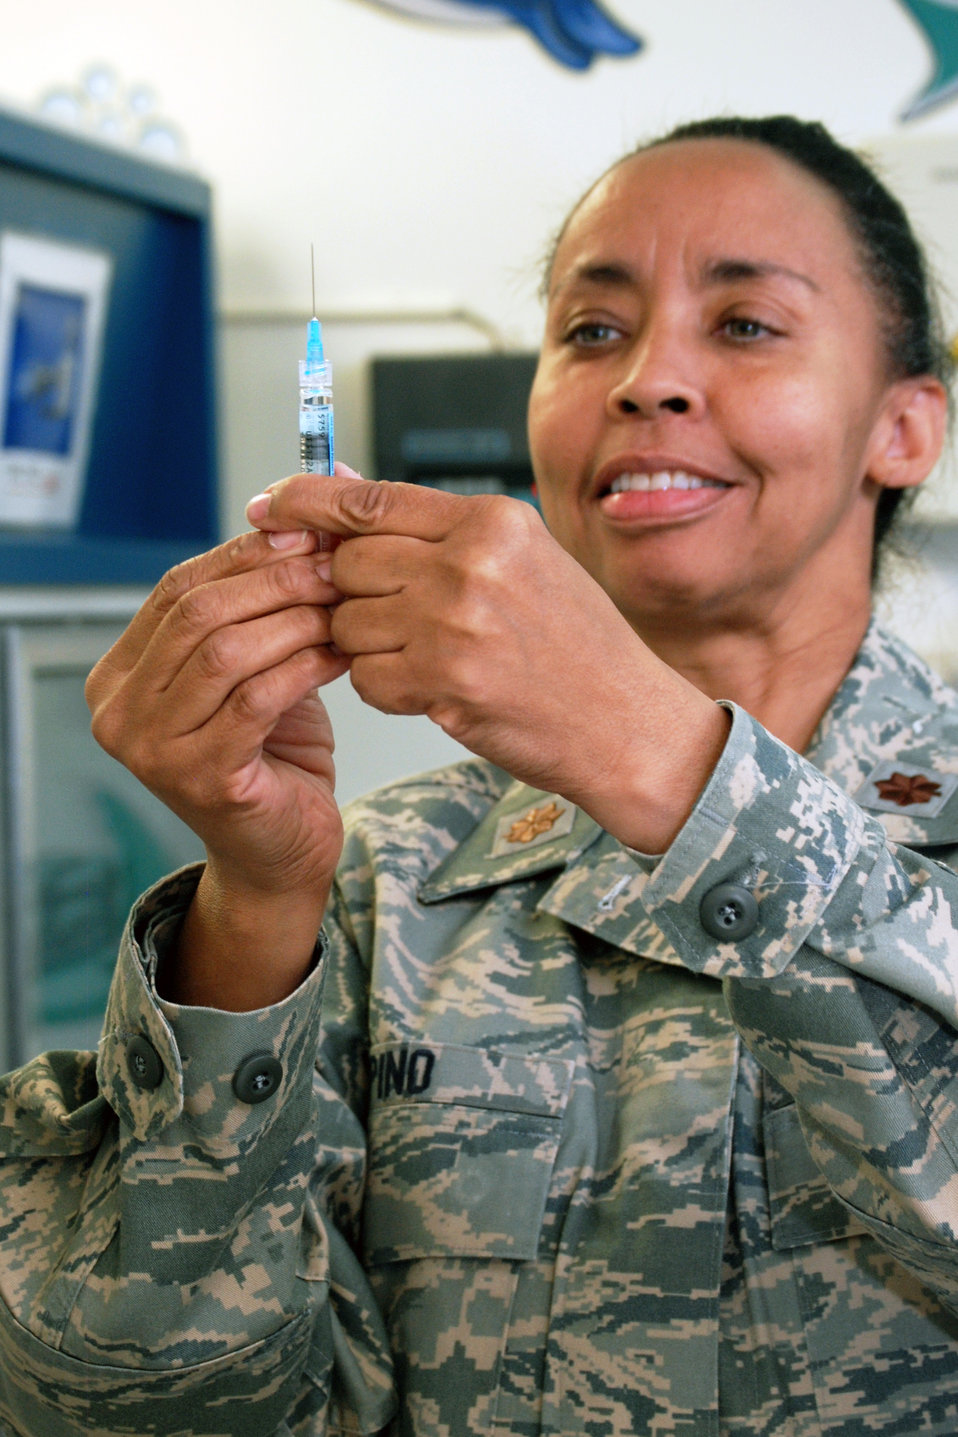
Maj. Paula Pino prepares to administer a flu shot during the unit's training March 6, 2010, at Patrick Air Force Base, Fla. Major Pino is assigned to the 920th Aeromedical Staging Squadron.